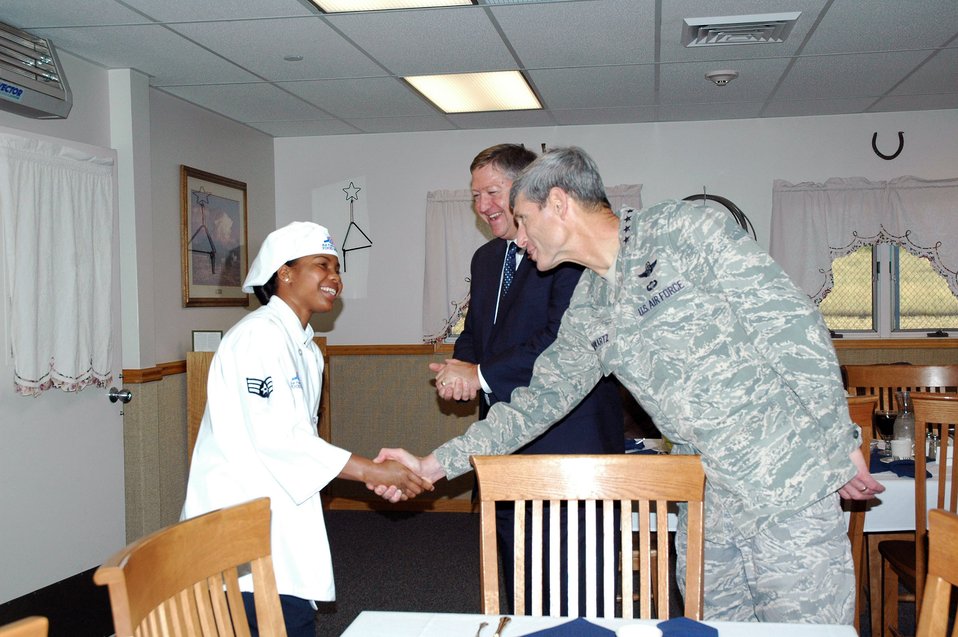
Top leaders stress importance of excellence, keeping a promise

Senior Airman Amanda Reed welcomes Air Force Chief of Staff Gen. Norton A. Schwartz to Bravo-01 missile alert facility as acting Secretary of the Air Force Michael B. Donley looks on. The top two Air Force officials were in Great Falls, Mont. on Aug. 22 to meet with key personnel and Airmen from Montana's Air National Guard and Malmstrom Air Force Base, Mont. Airman Reed is a 10th Missile Squadron chef.